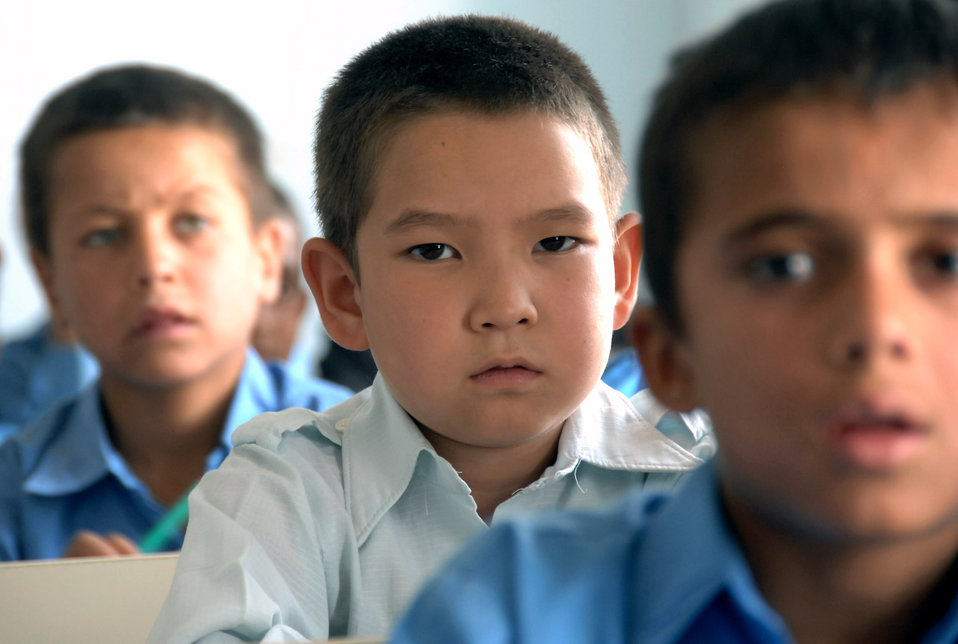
Afghanistan experiences won't be forgotten

Male Afghan students sit in their classroom Aug. 5, 2007, in Kabul, Afghanistan. International Security Assistance Force troops visited the school to deliver school supplies.